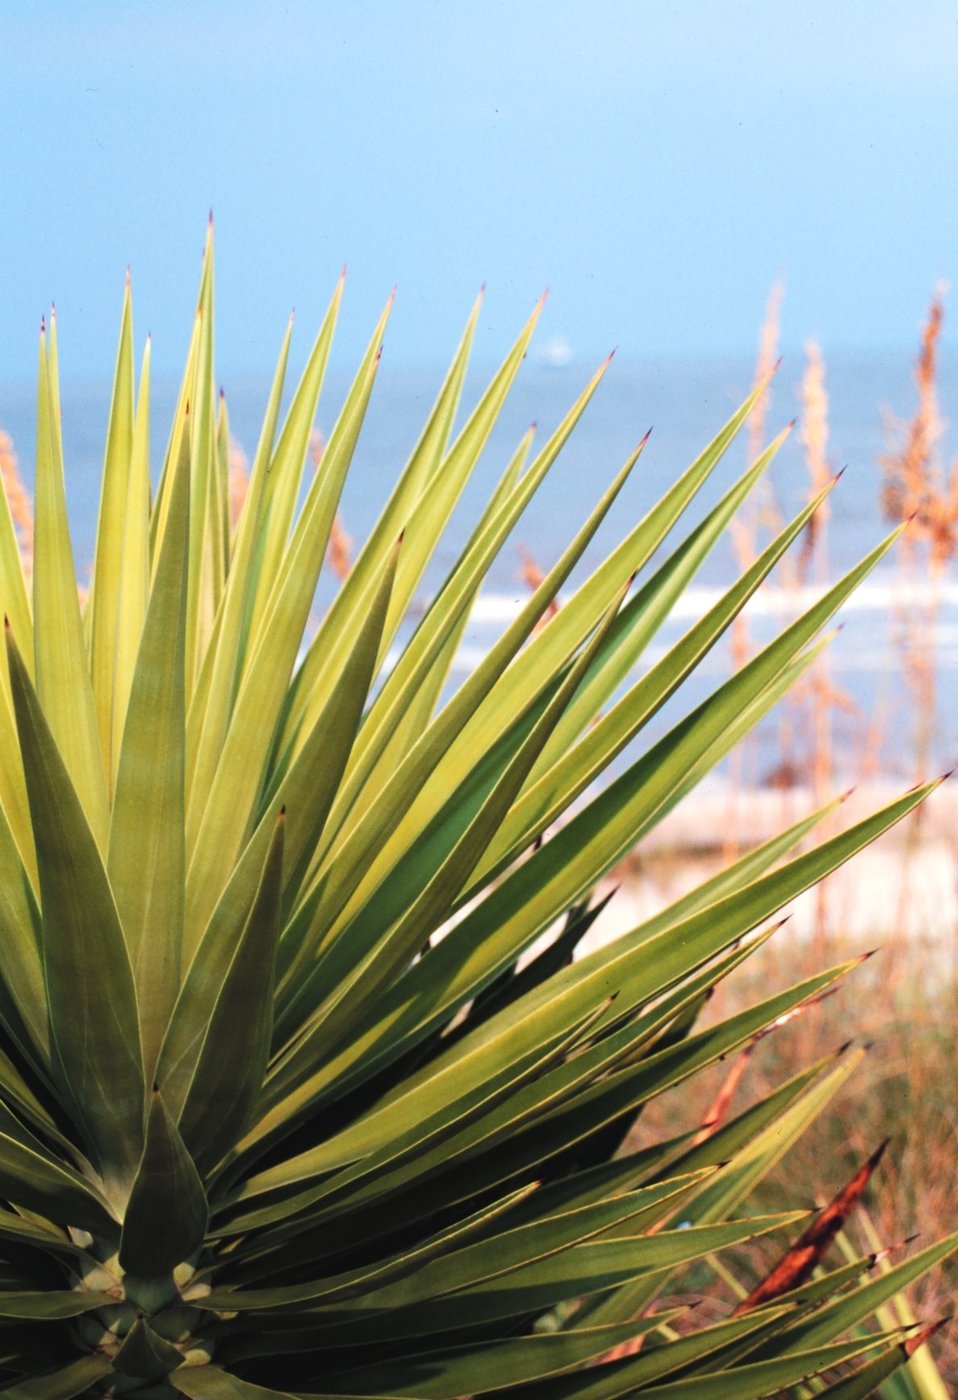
Looking over a palmetto to the Atlantic Ocean